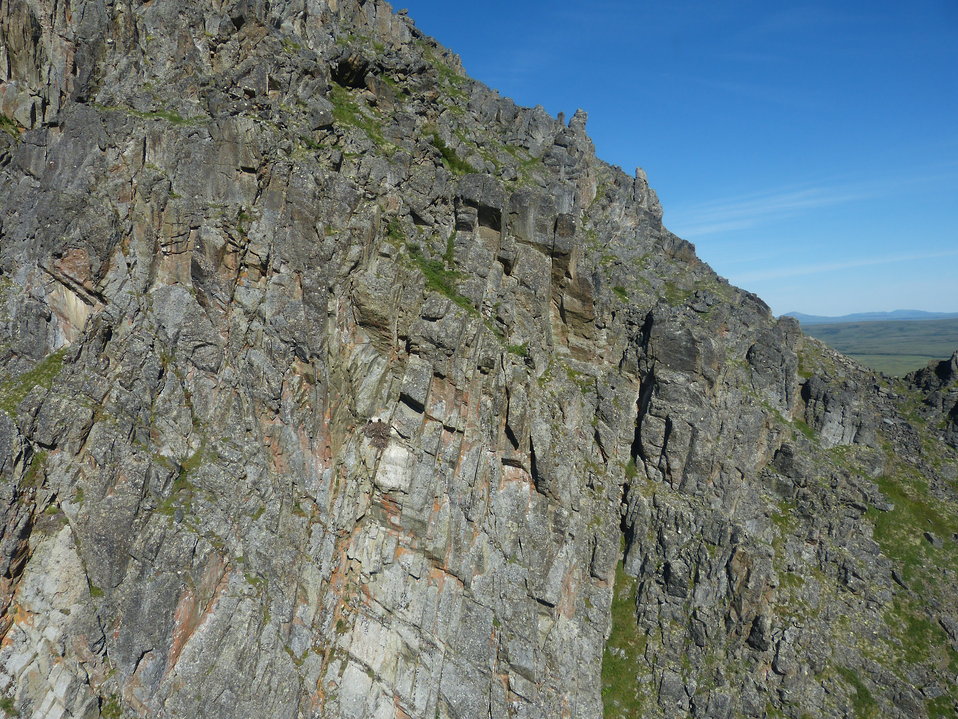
Golden Eagle nest, Kilbuck Mountains, Yukon Delta National Wildlife Refuge

Photo by: Kristine Sowl,
USFWS, Yukon Delta NWR, July 11, 2013